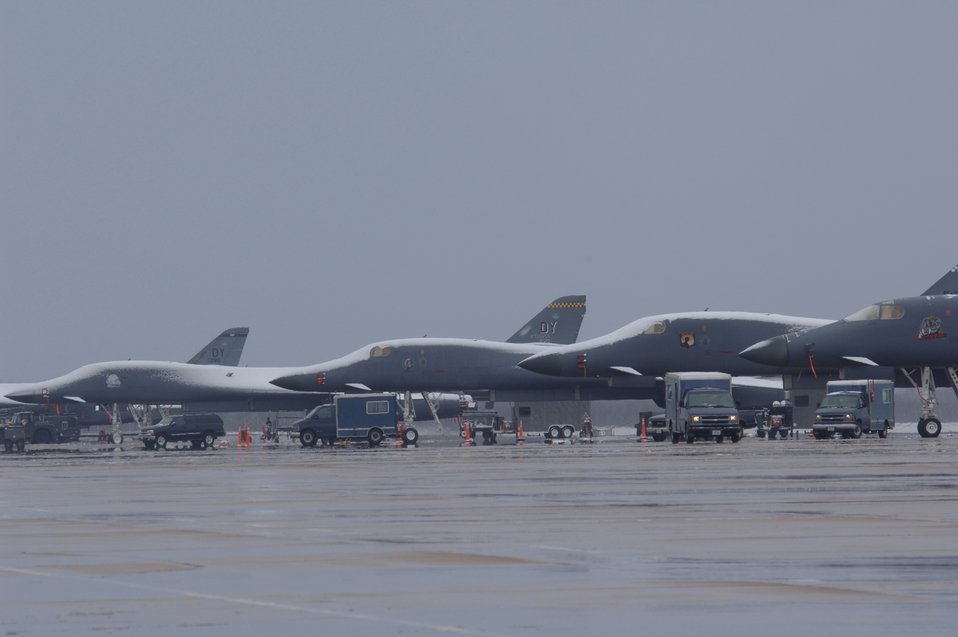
Deep in the frozen heart of Texas

Frosted B-1 Lancers sit on the flightline at Dyess Air Force Base, Texas, Jan. 17. Operations continue at at the base, despite a dangerous winter freeze that affected much of the state.